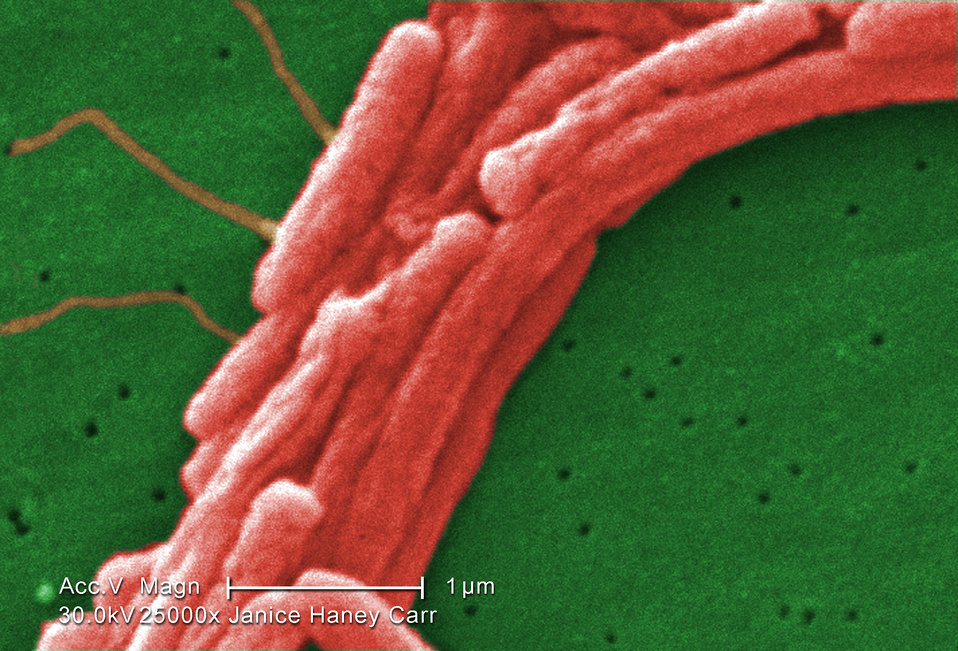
Under a very high magnification of 25000X, this colorized scanning electron micrograph (SEM) depicted a grouping of Gram-negative Legionella pneumophila bacteria. Note that in this view you're able to see a number of the flagella emanating from these organisms. Please see PHIL 11092 through 11152 for additional SEMs of these organisms, specifically PHIL 11105 for a black and white version of this image.